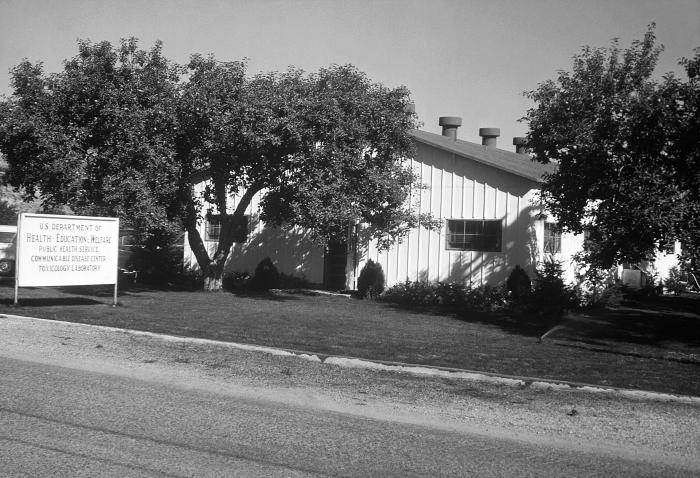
This 1959 historic image depicted the front of a Health, Education, and Welfare, Public Health Service, Communicable Disease Center, Toxicology Laboratory, Field Station, which was located in Wenatchee, Washington.